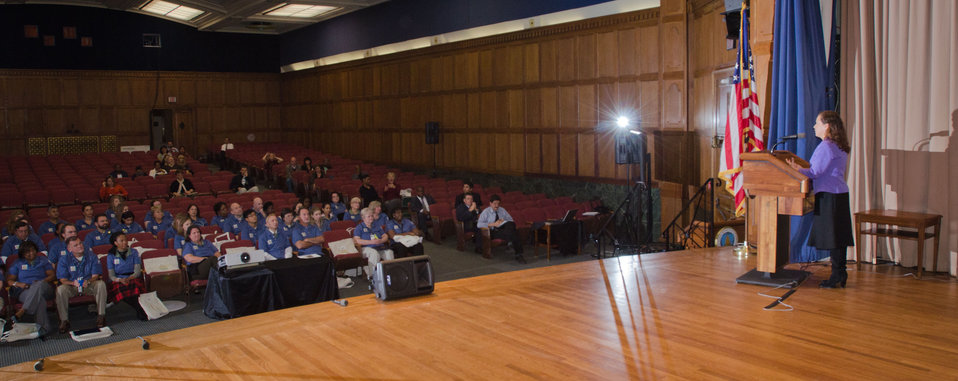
Graduation day of the 2011 U.S. Department of Agriculture (USDA) Executive Master Gardeners, on Tuesday, November 8, 2011 in Washington, DC. During the past six-weeks, students contributed 40-hours of volunteer time, completed studies and testing to receive their certificates today as an Executive Master Gardener. Many of the sessions occurred before work hours, during lunchtime or at community garden project sites such as Powell Middle School. USDA challenges its employees to establish People's Gardens at USDA facilities worldwide or in community gardens. People's Gardens vary in size and type, but all have a common purpose - to help the community and the environment. To learn about the People’s Garden Initiative visit www.usda.gov/wps/portal/usda/usdahome?contentid=peoples g....